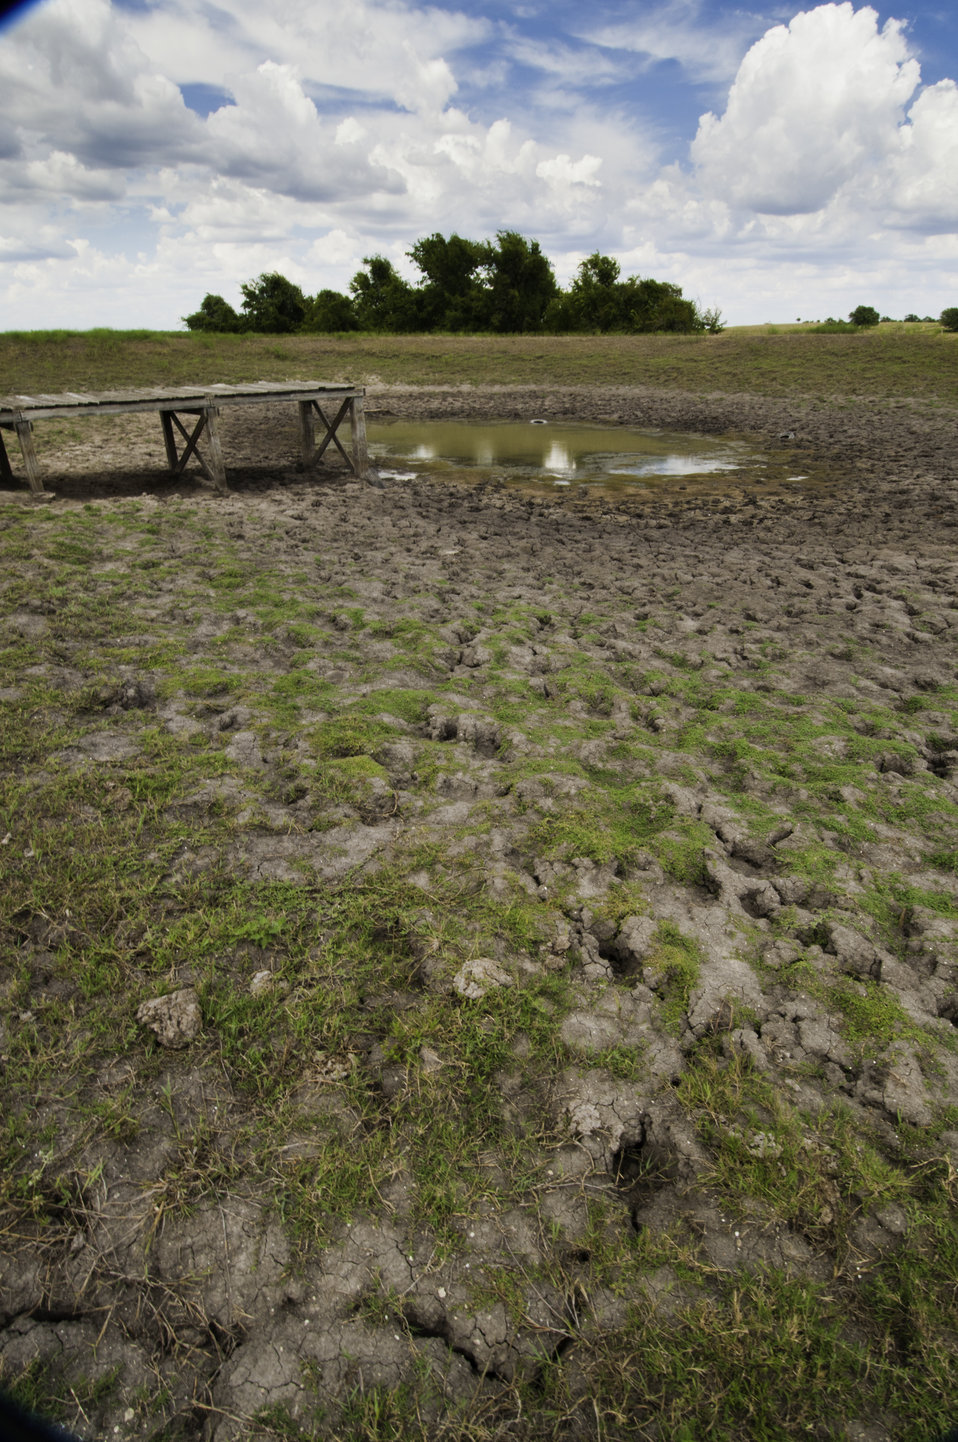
Dry livestock tanks show the effect of drought in Schulenberg, TX on Aug. 23, 2013.